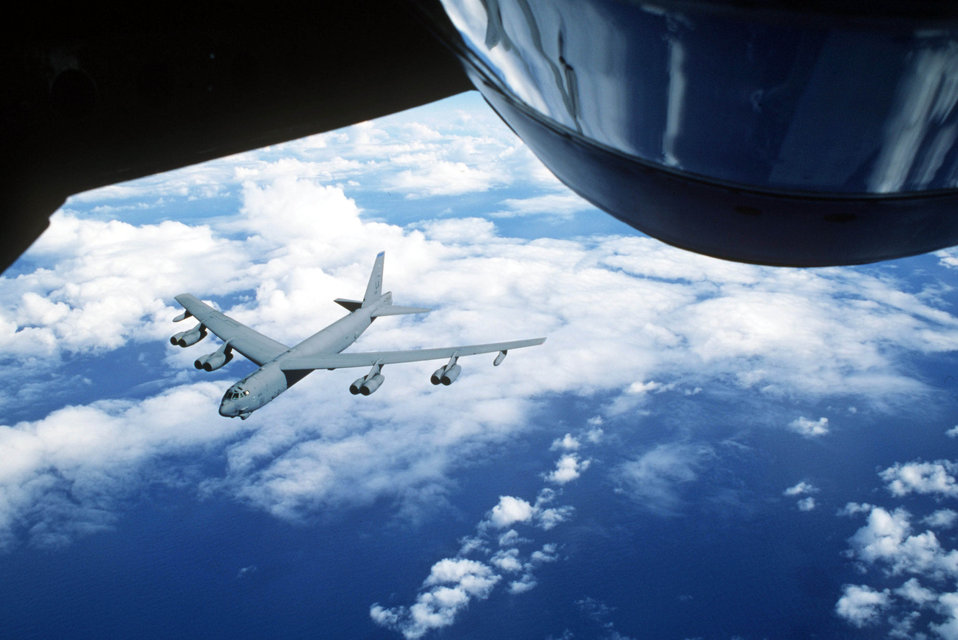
Mine layer

OVER THE NORTH SEA -- A B-52H of the 20th Bomb Squadron from the 2nd Bomb Wing, Barksdale Air Force Base, La., approaches a KC-135R Stratotanker assigned to the 100th Aerial Refueling Wing at Royal Air Force Mildenhall, England, to take on fuel. The B-52H took on 120,000 pounds of fuel over the North Sea after dropping eight MK-52 mines in exercise Blue Harrier.